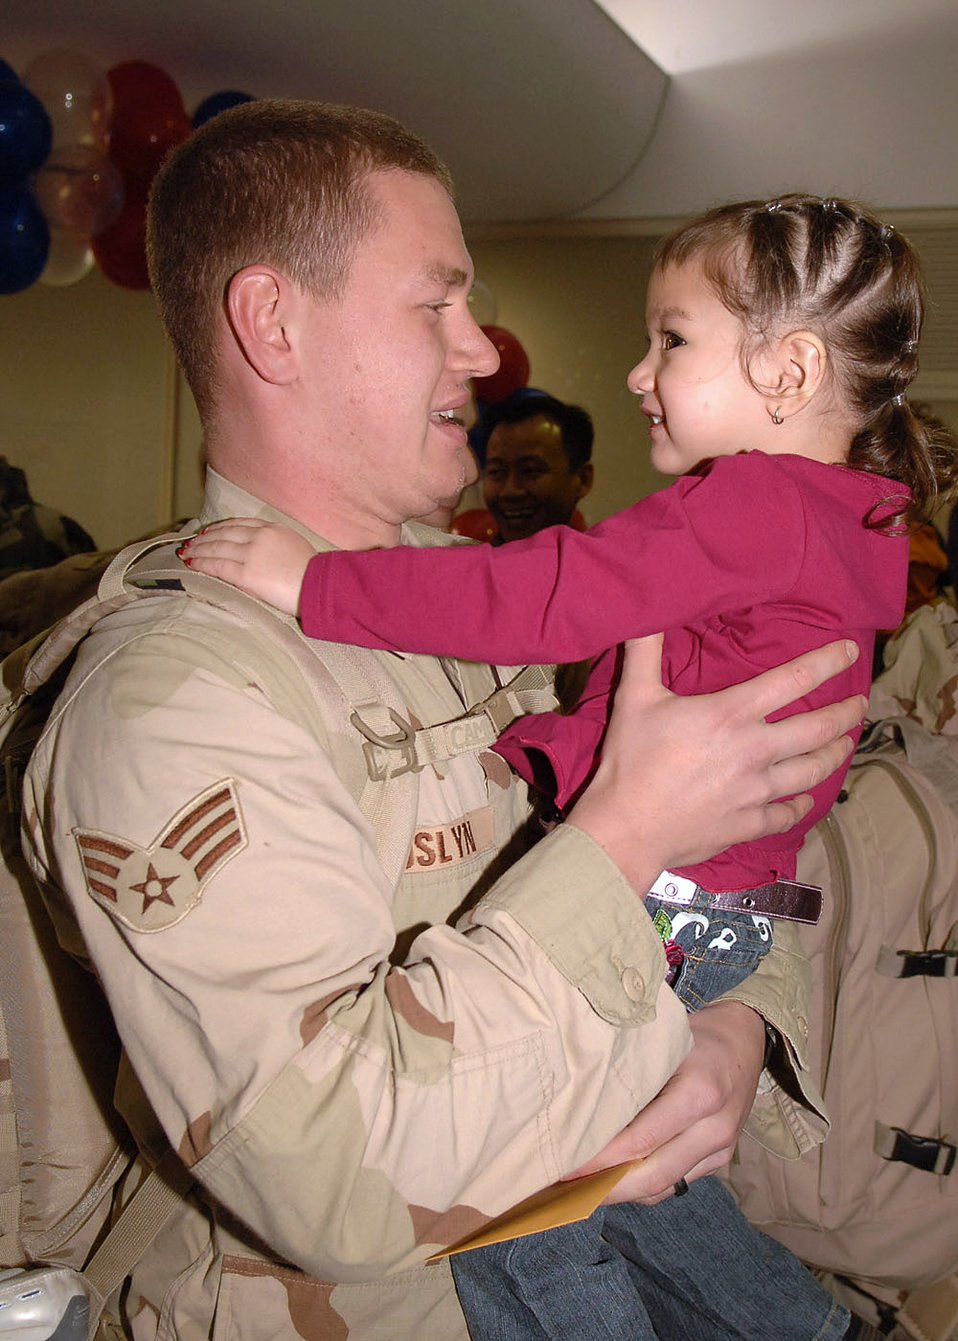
Coming home

Senior Airman Josh Joslyn reunites with his daughter, Jasmine Joslyn, after his deployment from Operation Iraqi Freedom Jan. 23 at Yokota Air Base, Japan. Airman Joslyn is assigned 374th Logistic Readiness Squadron.